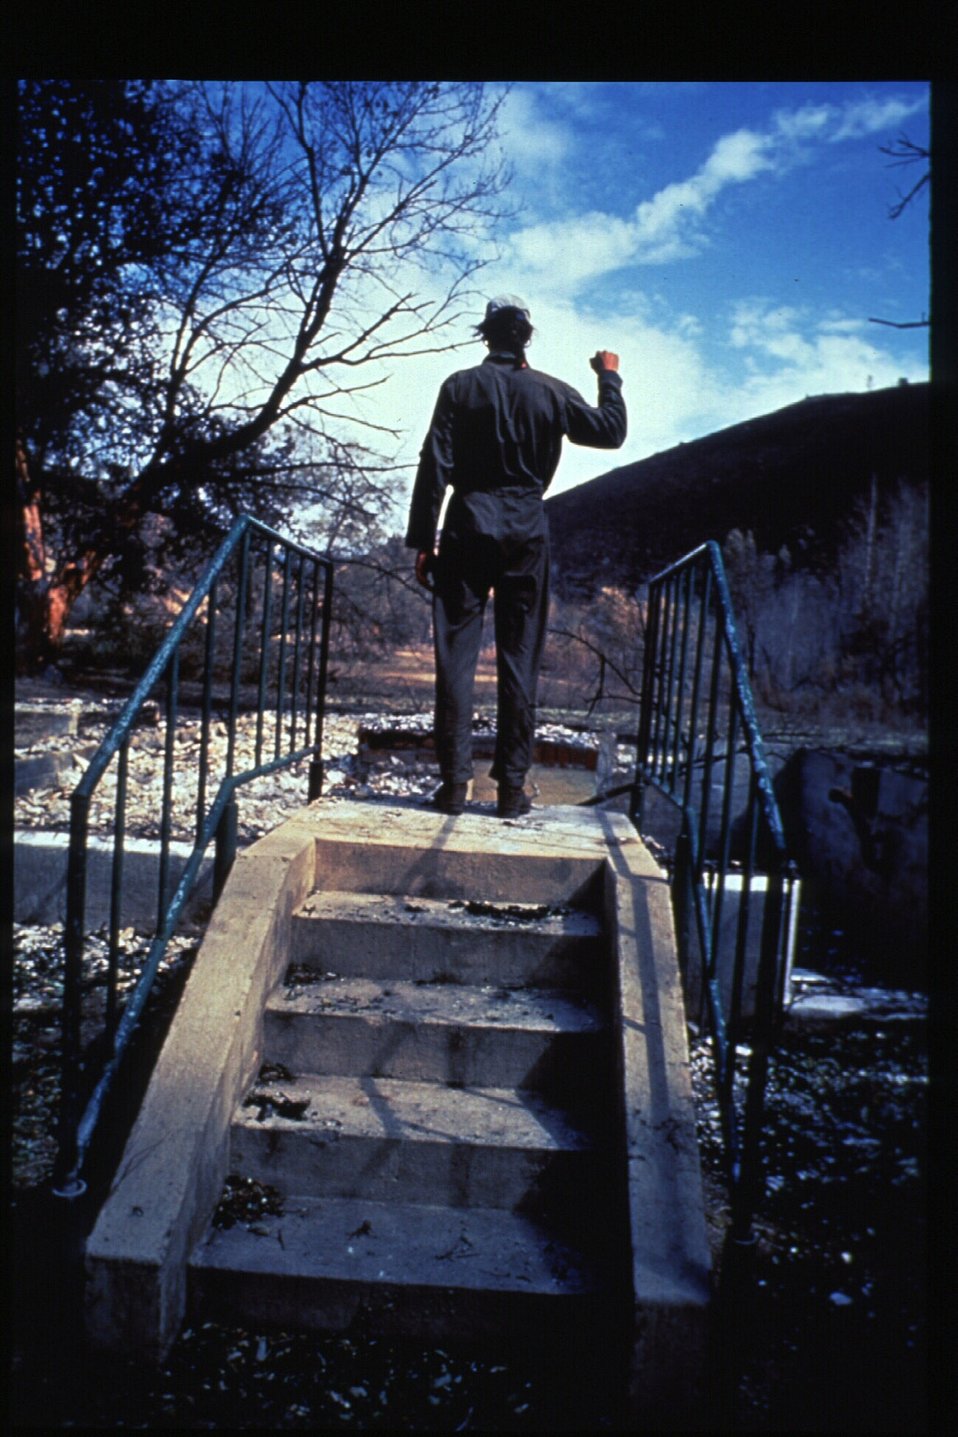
Boise Foothills Fire Danskin Mountains and South Fork of Boise River Burnt house foundation Four River Field Office LSRD Lower Snake River District